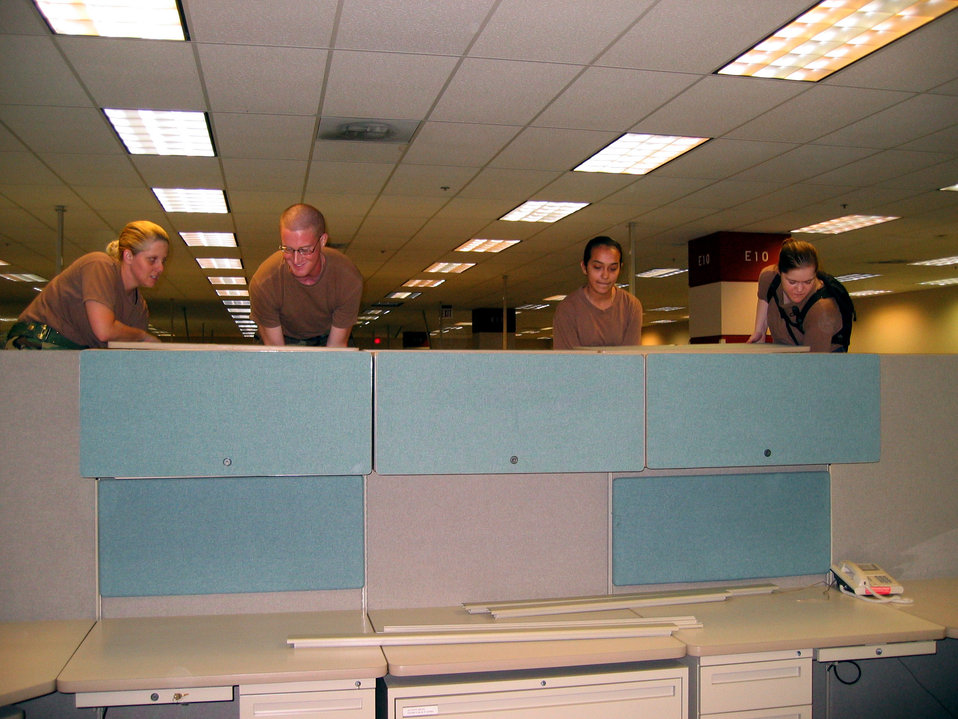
Lackland Airmen turn office areas into living spaces

SAN ANTONIO -- Airmen from nearby Lackland Air Force Base remove modular office furniture to make room for people displaced by Hurricane Katrina. In all, 200 Airmen helped turn a 350,000 square foot office building into a living area.